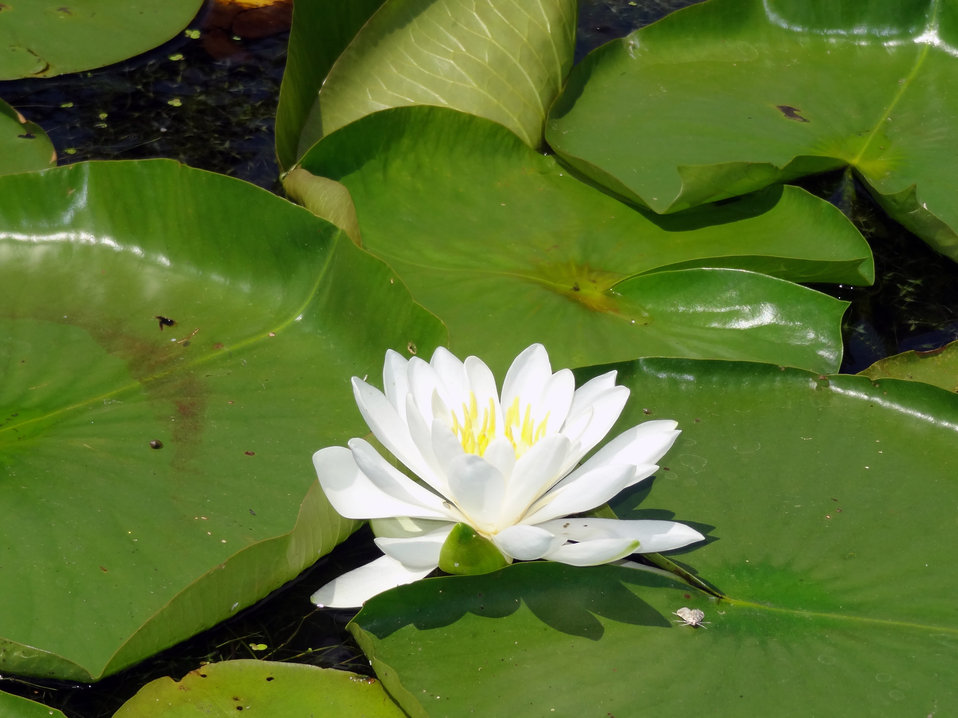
White Lily

A beautiful white water lily at Minnesota National Wildlife Refuge.